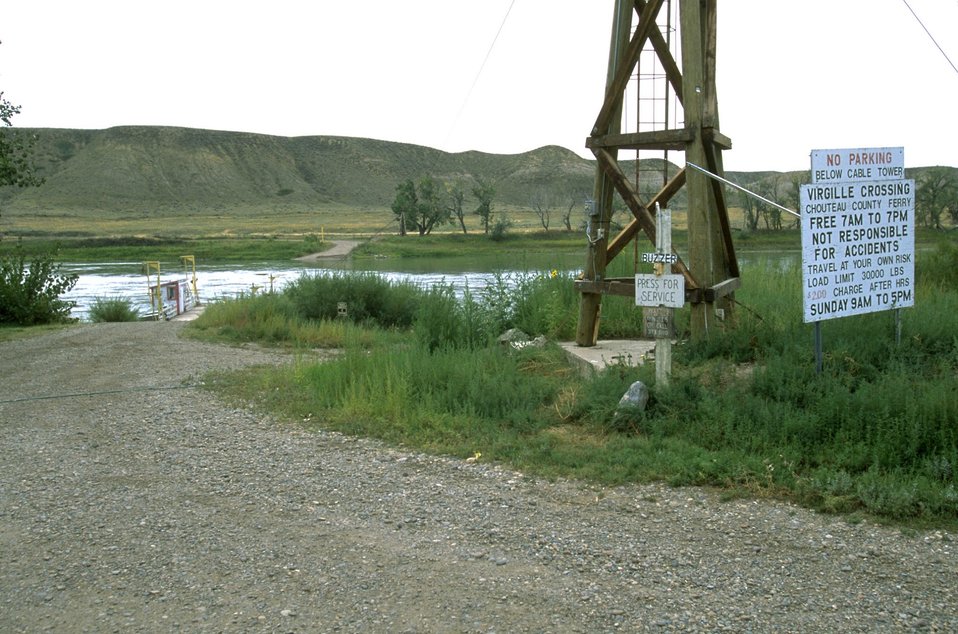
Virgelle Ferry on Upper Missouri River near Loma